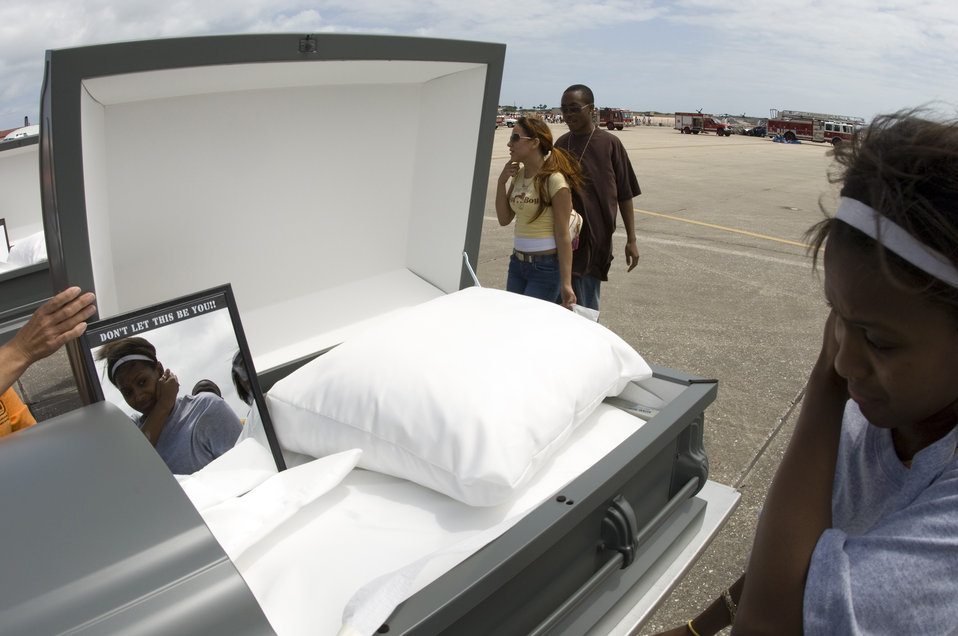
'Not on Our Watch'

Students were asked to look into one of eight coffins as they left Operation NOW events on Tuesday, April 11, 2006, at Patrick Air Force Base, Fla. The eight coffins represent the eight Brevard County, Fla., teens killed in auto accidents last year. The events are designed to be graphic and